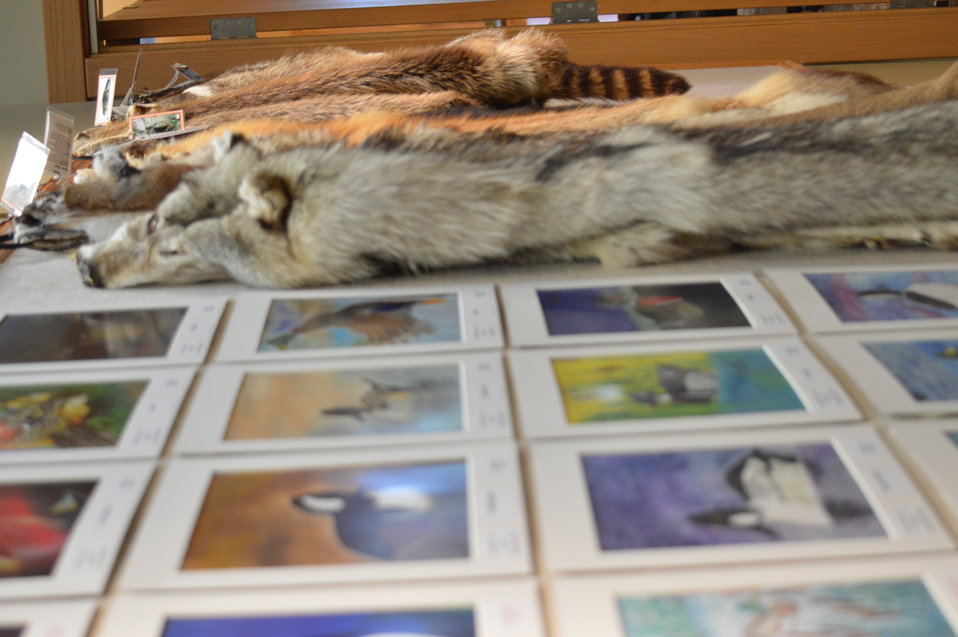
Duck drawings and furs

Scenery and wildlife and Audubon National Wildlife Refuge in North Dakota.